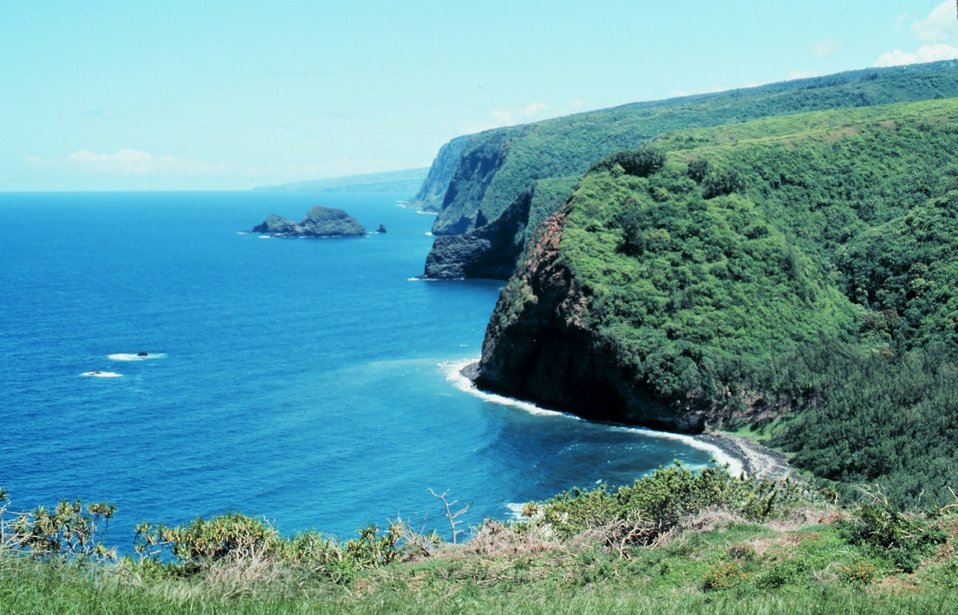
Looking southeast along the Kohala Mountains from the northwest tip of Hawaii